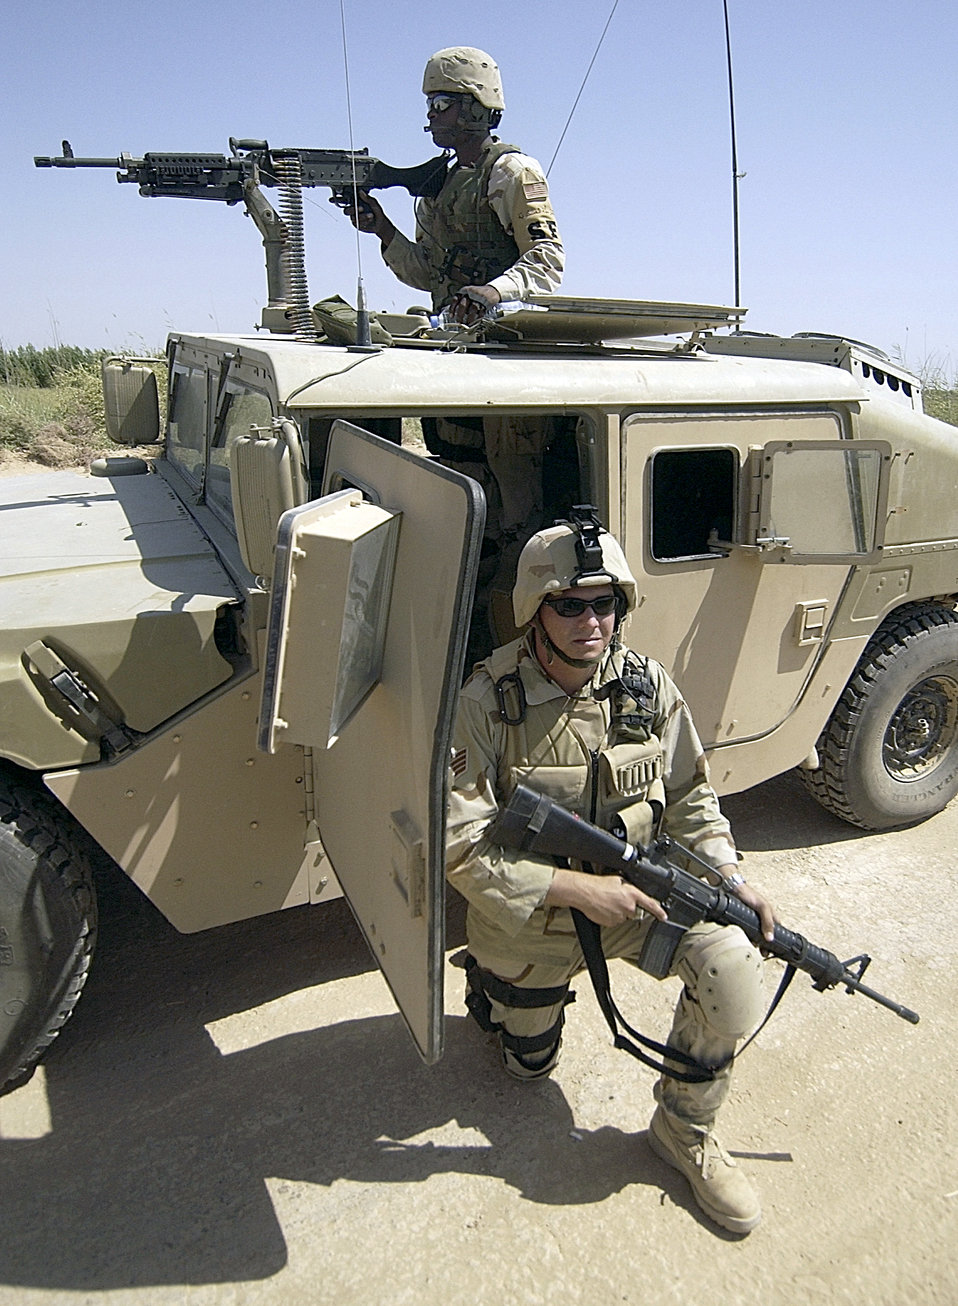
Covering their backs

BALAD AIR BASE, Iraq -- Security forces people from the 332nd Air Expeditionary Security Forces Squadron here conduct a perimeter sweep here Aug. 1.